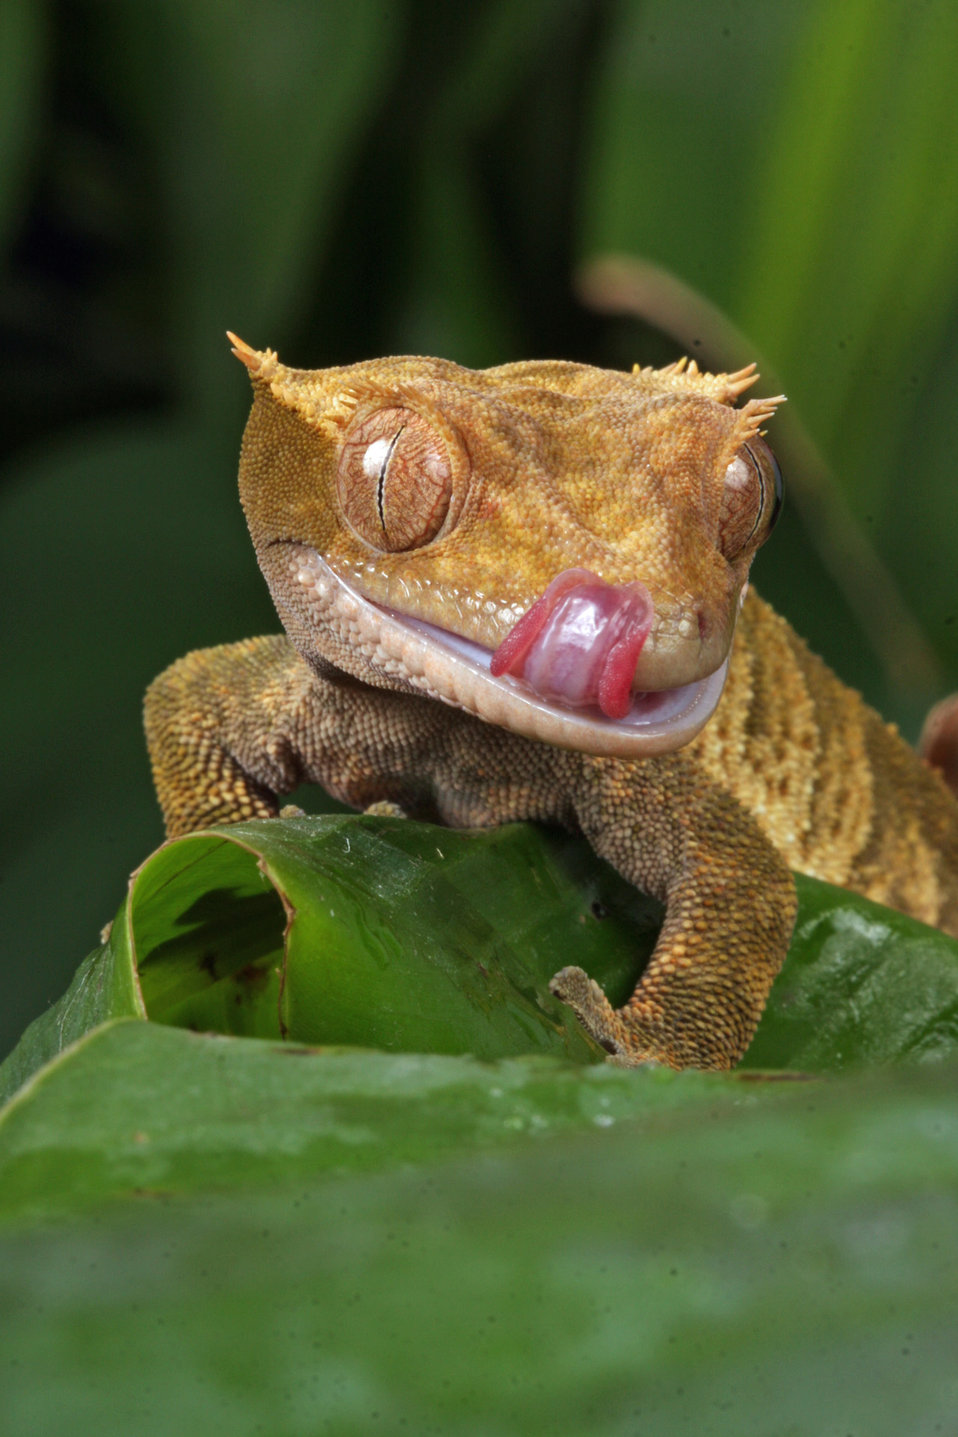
Gecko licking lips

Close up macro image of a new caledonian crested gecko licking lips.